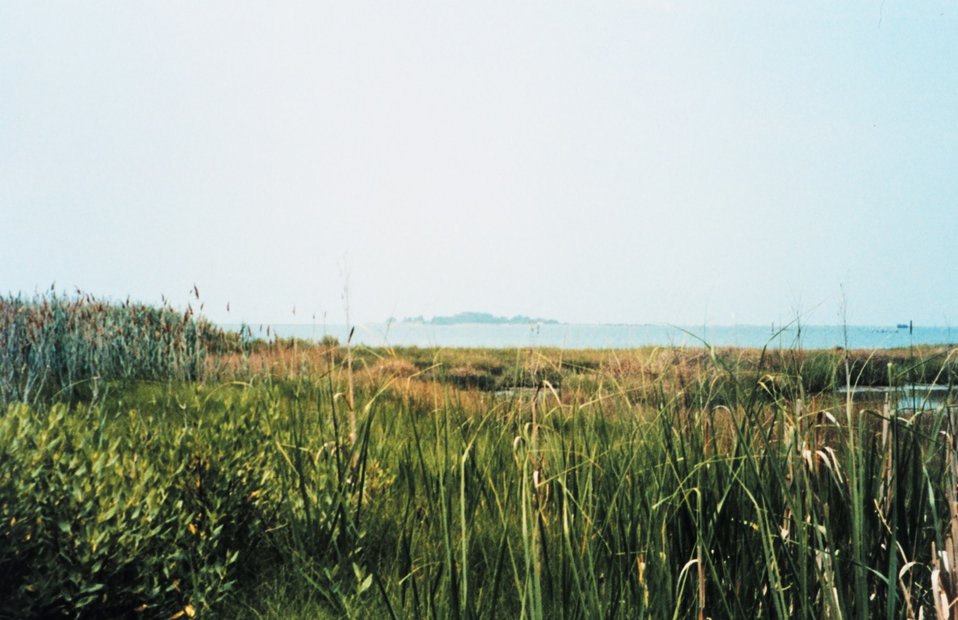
View across a marsh at Smith Island.